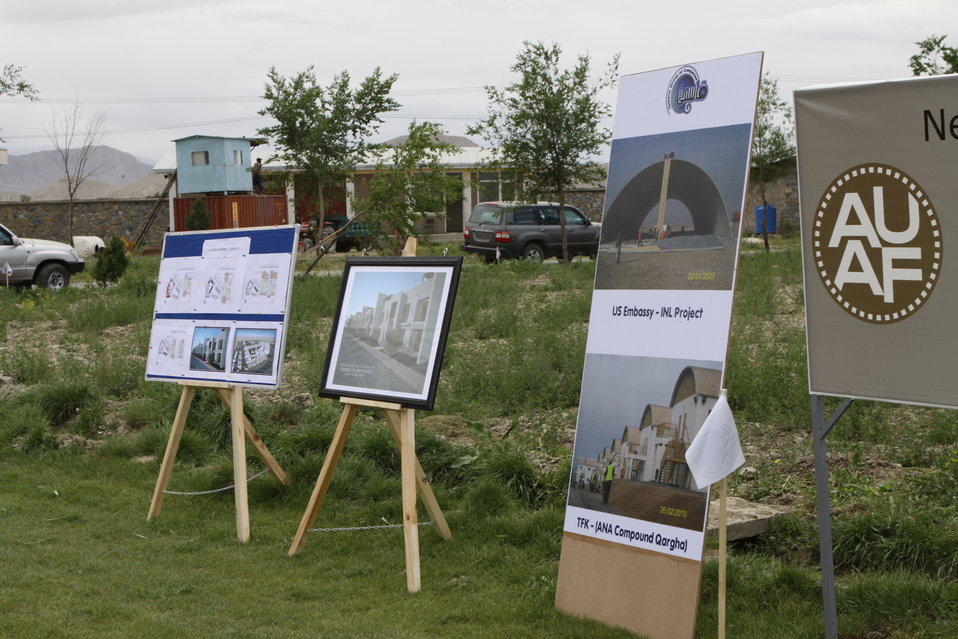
100526 AUAF Graduation 396